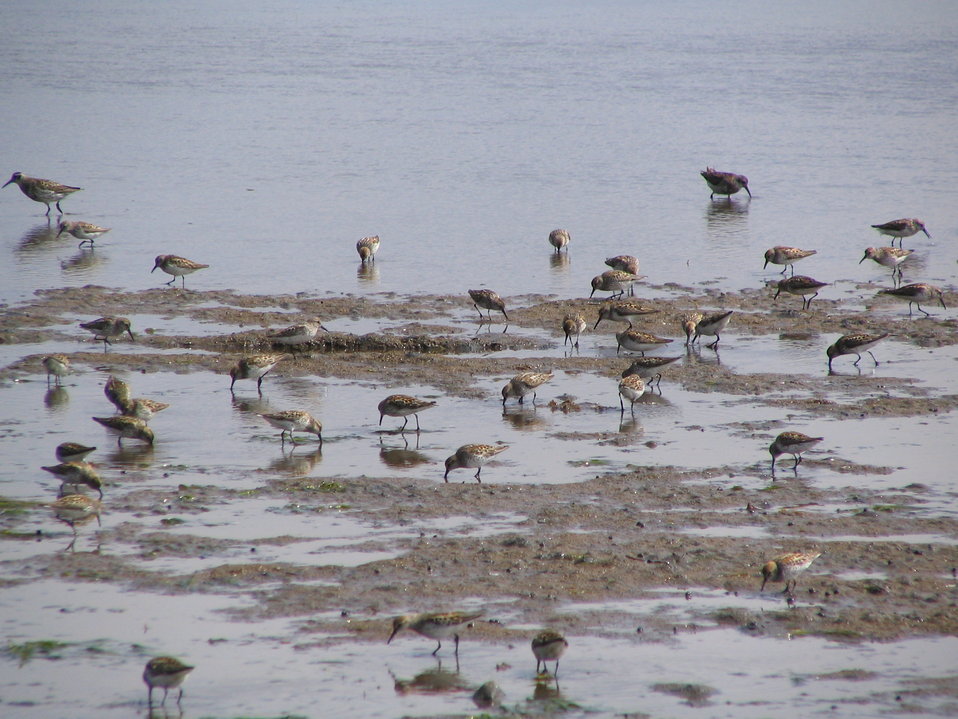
Western sandpipers and a few Rock sandpipers, Kinzarof Lagoon, Izembek National Wildlife Refuge